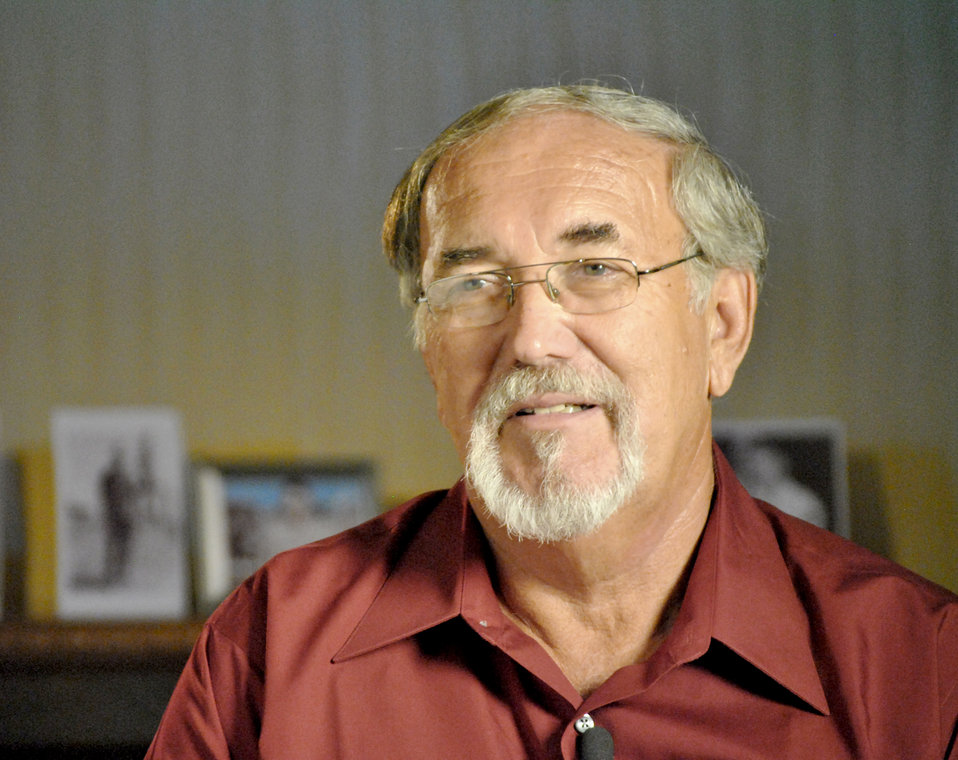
CMSgt Etchberger - Medal of Honor

Steven Wilson, son of Air Force Medal of Honor recipient Chief Master Sgt. Richard Etchberger, recounts the events leading to his step-father's award, Sept. 19, 2010.